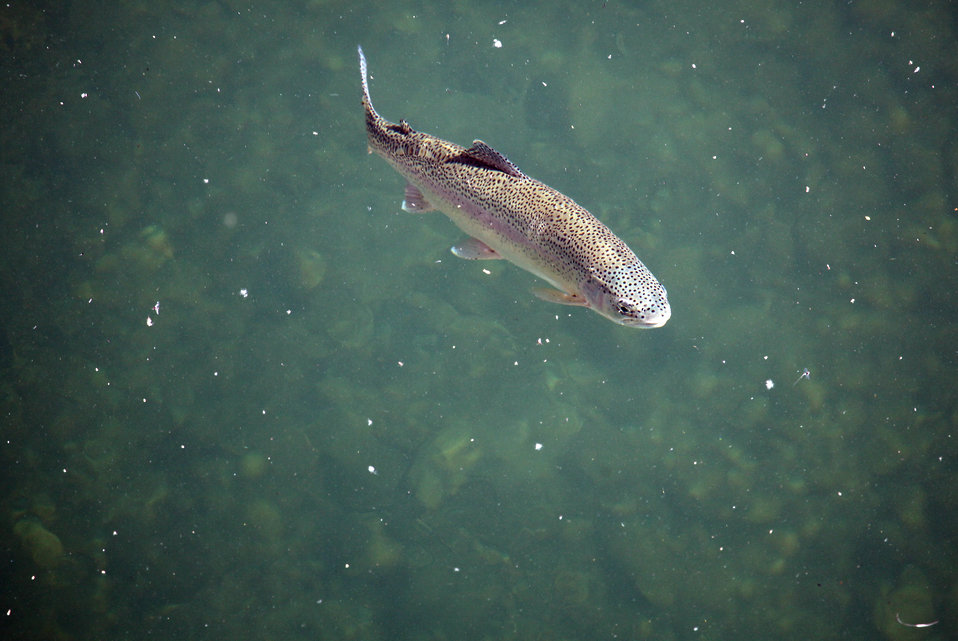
Corps reconnaissance team tours Yuba River

Salmon like this were present in waters on both sides of Daguerre Point Dam during a visit by a study team from the U.S. Army Corps of Engineers Sacramento District June 18, 2014. The team is assessing possible federal projects for ecosystem restoration along Northern California's Yuba River and reviewed the water’s route from Daguerre Point Dam up to Downieville. The Corps team was accompanied by members of the Yuba County Water Agency and several YCWA consultants in this initial trip to gather data on the overall state of the Yuba and water facilities along the route.